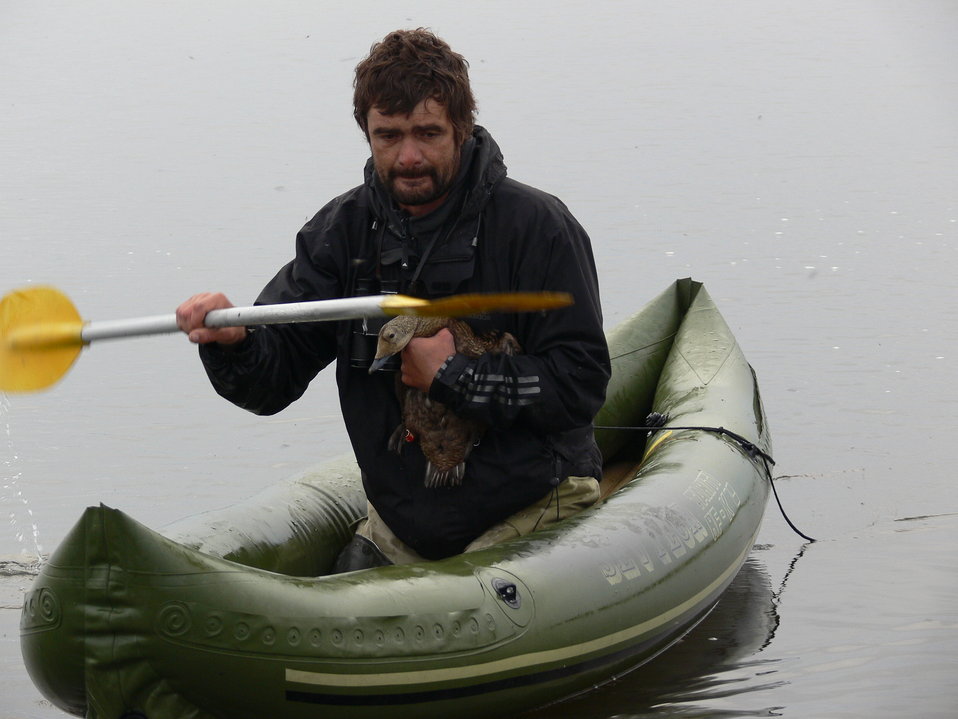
Valery Shokhrin

Russian conservationist working with spectacled eiders.